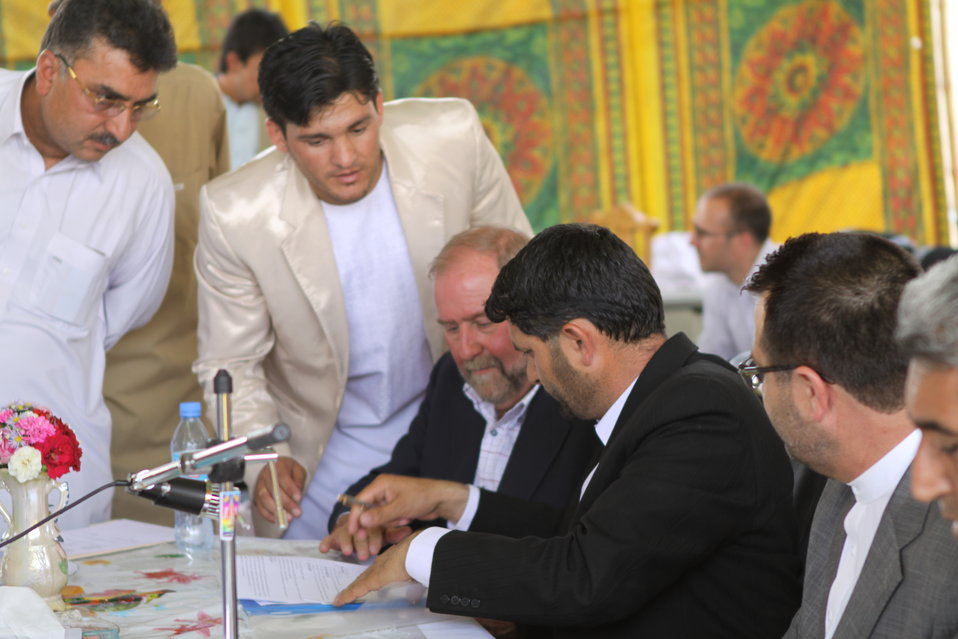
Bolan Poultry Farm